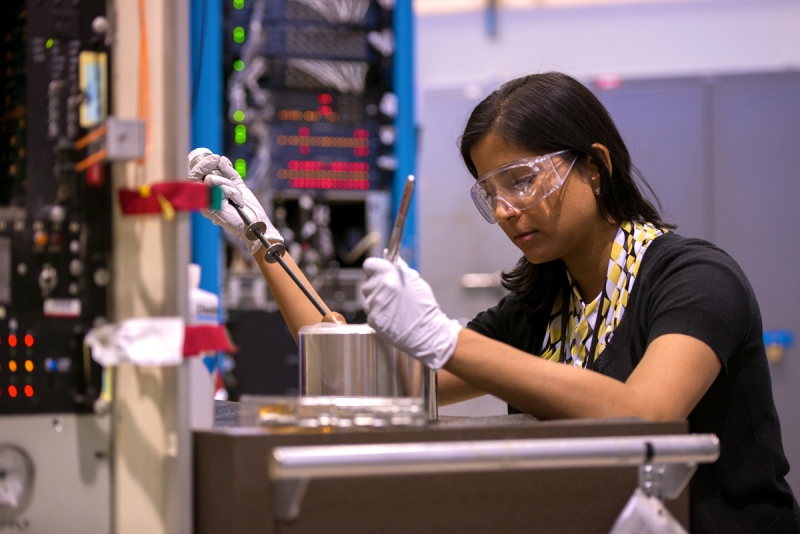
Ritimukta Sarangi is a Staff Scientist for the Structural Molecular Biology Division at Stanford Synchrotron Radiation Lightsource of the SLAC National Accelerator Laboratory. She has held this position for three years, working on the design and development of a high-energy beamline with simultaneous polarized single-crystal X-ray absorption spectroscopy and X-ray crystallography capabilities. She began this work as an Associate Staff Scientist in 2007, upon her graduation from Stanford University with a Ph.D. in Chemistry. Ritimukta earned her M.Sc. in Chemistry from the India Institute of Technology in 2001, and her B.Sc. in Chemistry with a minor in Physics and Mathematics from Saint Xavier’s College in Kolkata, India. She mentors high school students in Stanford’s RISE program, is a lecturer at the Annual School of Synchrotron Radiation at SSRL, two summer school programs at SSRL, and is a member of several professional organizations. Ritimukta has lectured all over the world, and holds awards from Stanford, Q2XAFS, SLAC, and others.

Read her full story at energy.gov/diversity/articles/women-energy-ritimukta-sarangi